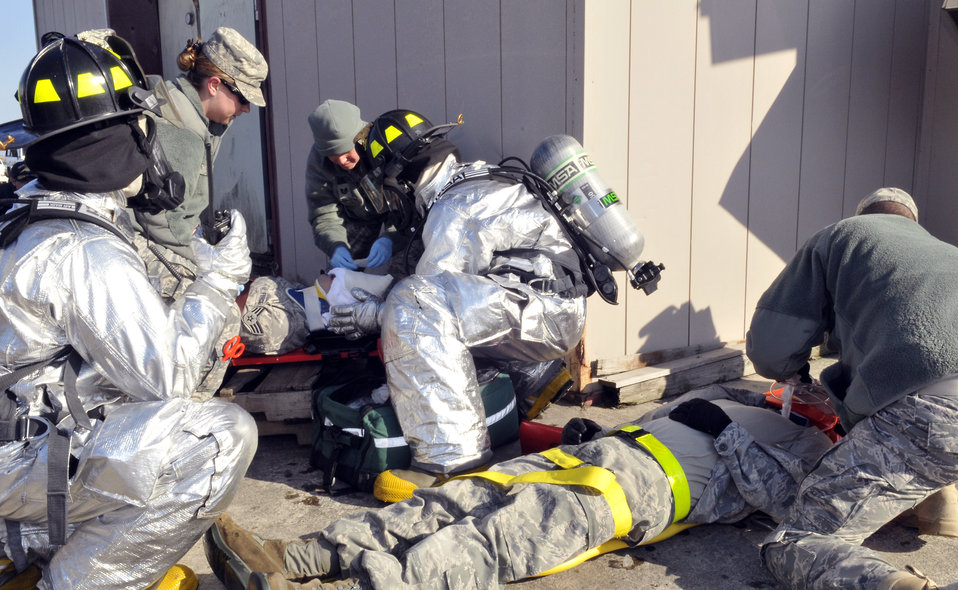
Emergency exercise

Members of the 35th Medical Group and firemen from the 35th Civil Engineer Squadron work together to stabilize two